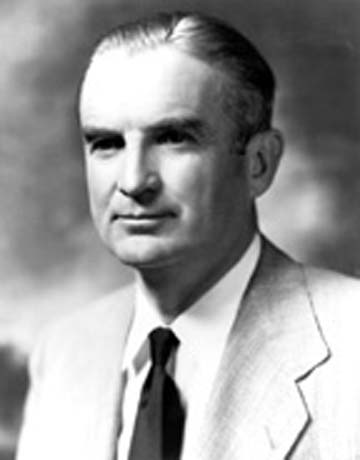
First SECAF

W. Stuart Symington, first Secretary of the Air Force.